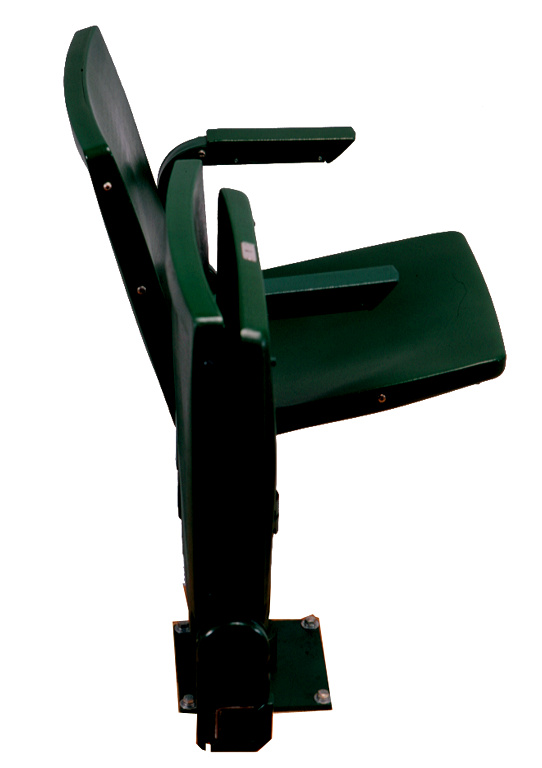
This was one of five images (PHIL# 9139 - 9143), depicting two rotating, folding stadium seats: one in the 'open' position; one in the closed position. These seats provided a unique level of flexibility for patrons of spectator events, where fixed seats were typically installed. Designed to provide the same range of seating options to people who use wheelchairs or scooters, they were able to be installed in either newly constructed or modified projects. The design combined two seat assemblies mounted and articulated from a single post. This flexibility allowed people using wheelchairs to sit with friends and family members, and therefore, feel integrated with the general public. A walking person could also use a seat, fold it up, or swing it to the side, and in this way, exit the row or aisle behind, while not disturbing the occupants of adjacent seats.